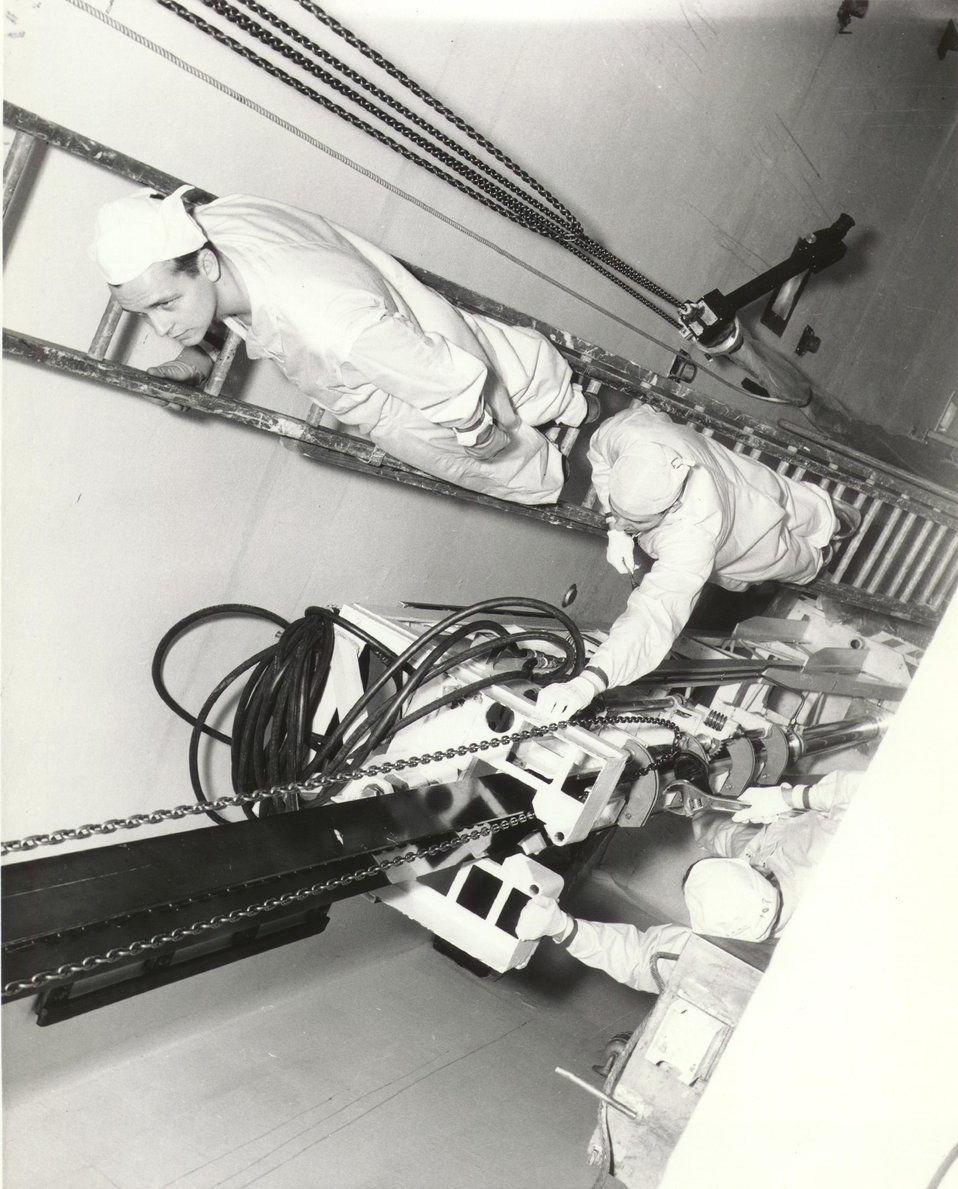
A trial run is made at the Shippingport Atomic Power Station on fitting a dummy 'seed' cluster into a transfer rack. c. undated